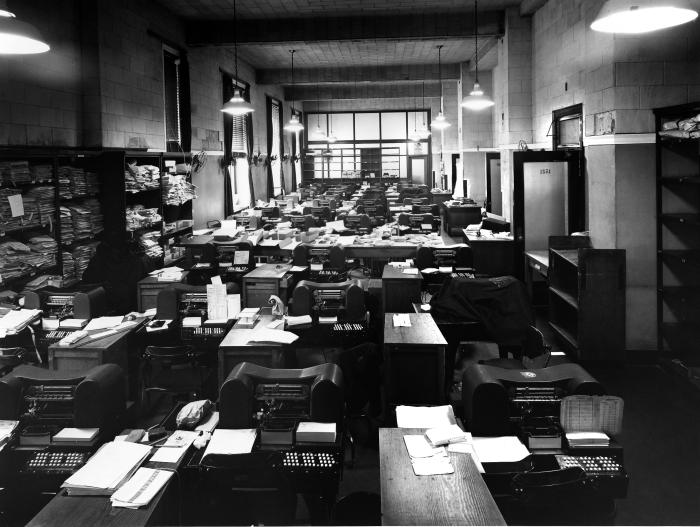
This historical photograph was provided by the Center for Disease Control's (CDC), National Institute for Occupational Safety and Health (NIOSH). The image depicted a Bureau of Internal Revenue office space, later renamed the Internal Revenue Service (IRS). This scene was captured before overhead fluorescent lighting was installed, the effects of which could be appreciated in PHIL #9530, and made a tremendous improvement in workplace comfort. Visible on the desks were tabulating machines, and stacks of tax returns from which figures were entered into the machines.Office work is visually demanding, and has always required good lighting, which may be defined as that which provides enough illumination so that workers can see printed, handwritten, or displayed documents clearly, but are not 'blinded' by excessively high light levels. The most common complaints resulting from poor lighting are eyestrain, eye irritation due to dry eyes, blurred vision, and headaches.